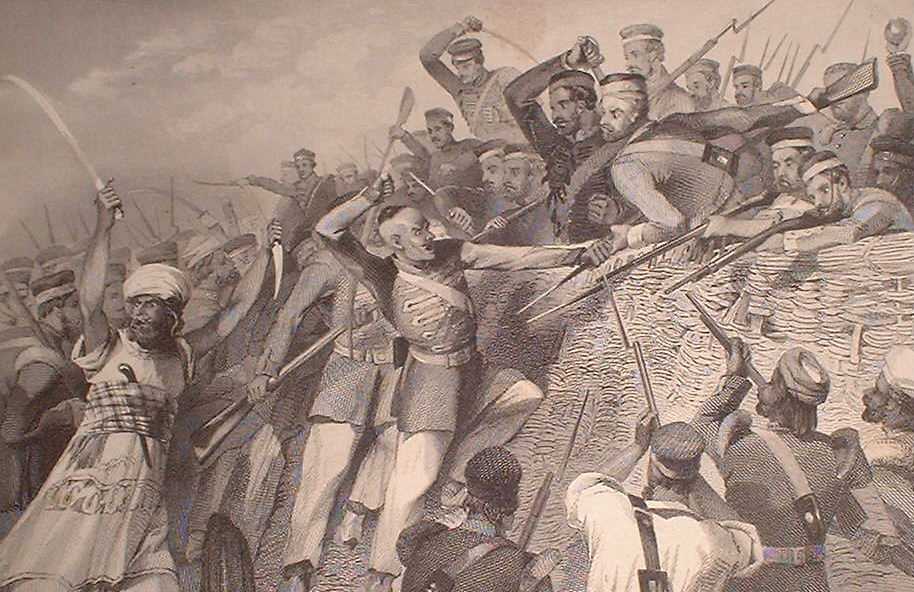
'Attack of the Mutineers on the Redan Battery at Lucknow, July 30th, 1857,